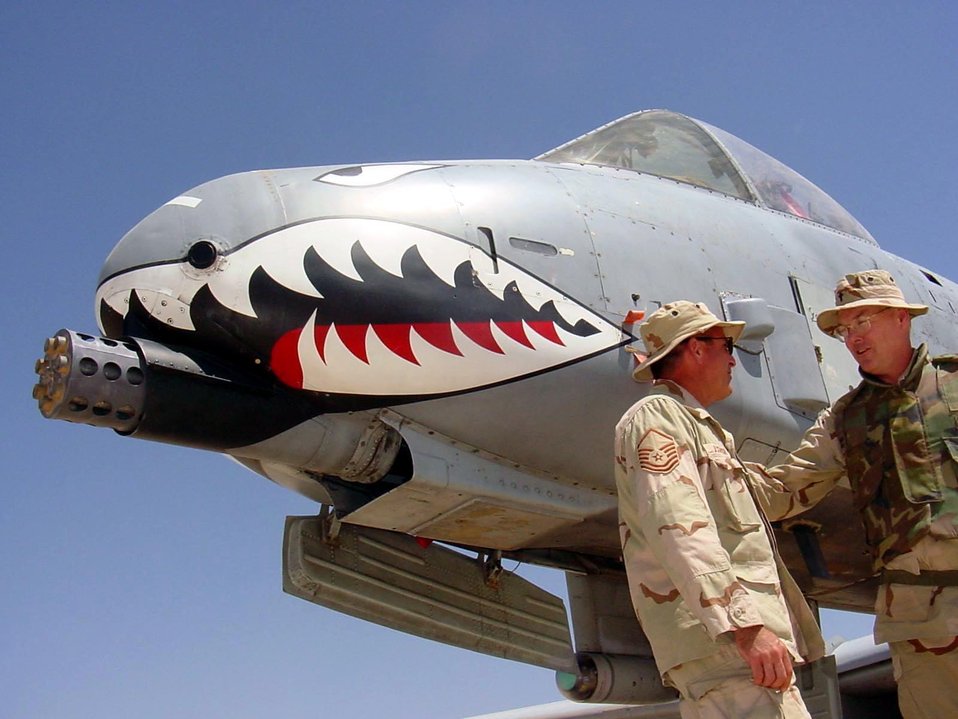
Making the rounds

OPERATION IRAQI FREEDOM -- Chaplain (Maj.) Dave Fitz-Patrick visits with Master Sgt. Richard O'Connor at Tallil Air Base in southern Iraq. The only Catholic chaplain in the region, he visits troops here and at outlying Army and Marine posts. Fitz-Patrick is deployed from Langley Air Force Base, Va., and O'Connor is a quality assurance inspector from Whiteman AFB, Mo.